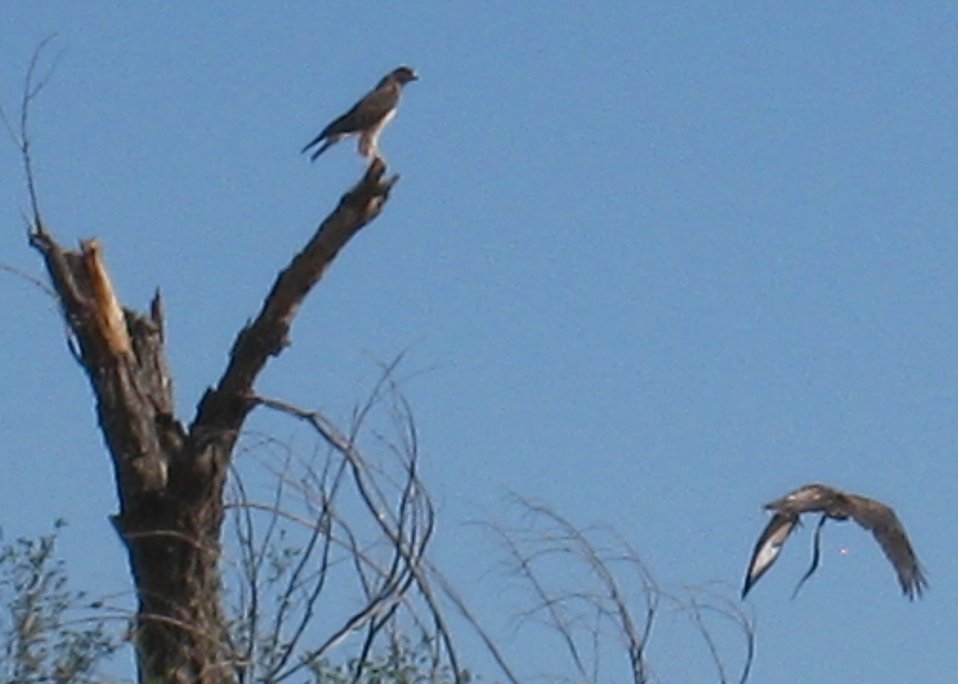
Hawks with Snake